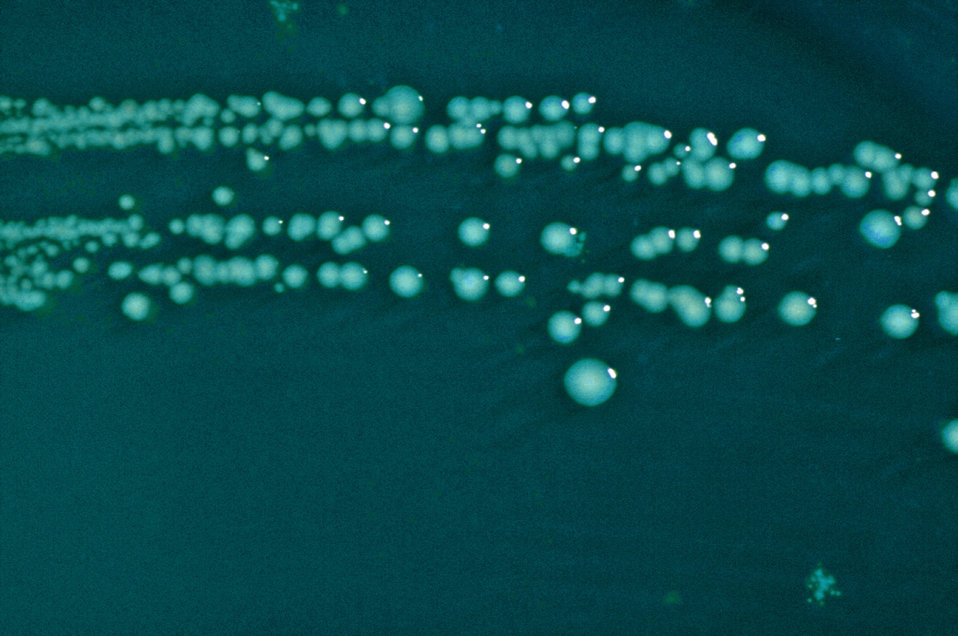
This photograph depicts the colonial morphology displayed by Shigella boydii bacteria cultivated on a Hektoen enteric (HE) agar surface; colonies of S. boydii bacteria grown on HE agar display a raised, green, and moist appearance.